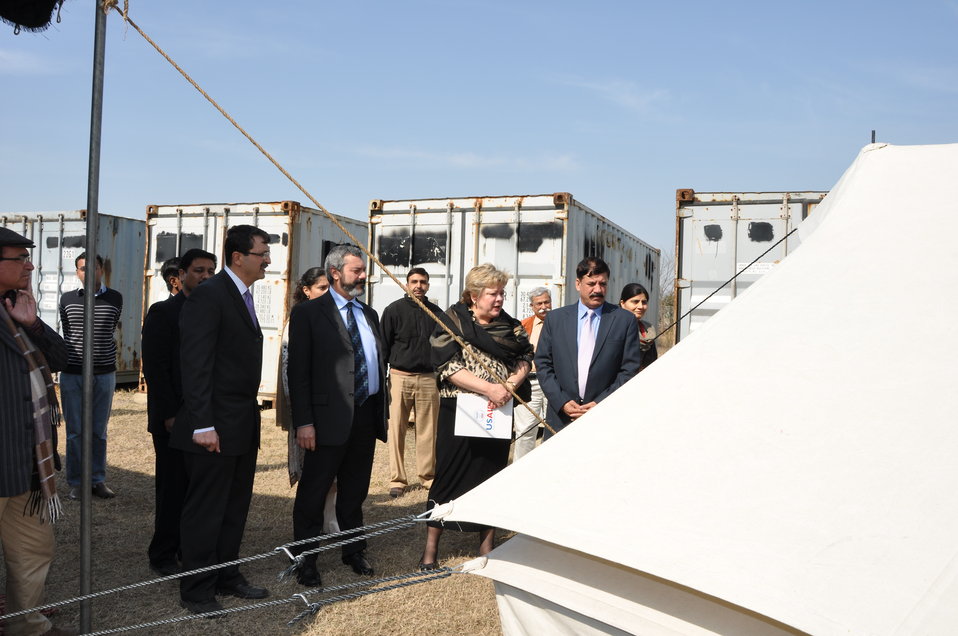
U.S. Agency for International Development (USAID) Deputy Director Karen Freeman and NDMA’s Brigadier Sajid Naeem along with other USAID officials at the handover of 858 tents by the U.S. Government to the Government of Pakistan.

For more information on the U.S. assistance related to the 2010 and 2011, please see

www.youtube.com/user/USAIDPakistan?feature=guide#p/u/4/-K...
www.youtube.com/user/USAIDPakistan?feature=guide#p/u/5/JG...
www.youtube.com/user/USAIDPakistan?feature=guide#p/u/7/nh...
www.youtube.com/user/USAIDPakistan?feature=guide#p/u/8/Jr...
www.youtube.com/user/USAIDPakistan?feature=guide#p/u/9/gZ...
www.youtube.com/user/USAIDPakistan?feature=guide#p/u/12/q...
www.youtube.com/user/USAIDPakistan?feature=guide#p/u/20/v...

Or Visit USAID
pakistan.usaid.gov

Check our videos and photos on YouTube and Flickr:
www.youtube.com/user/USAIDPakistan
www.flickr.com/photos/usaid pakistan